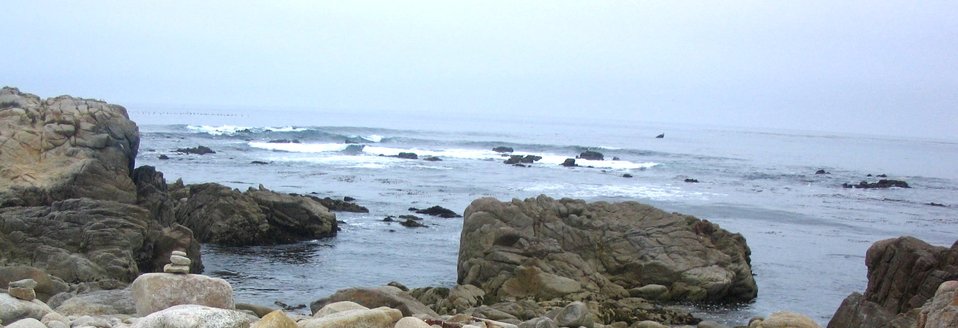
A vista of rock and surf